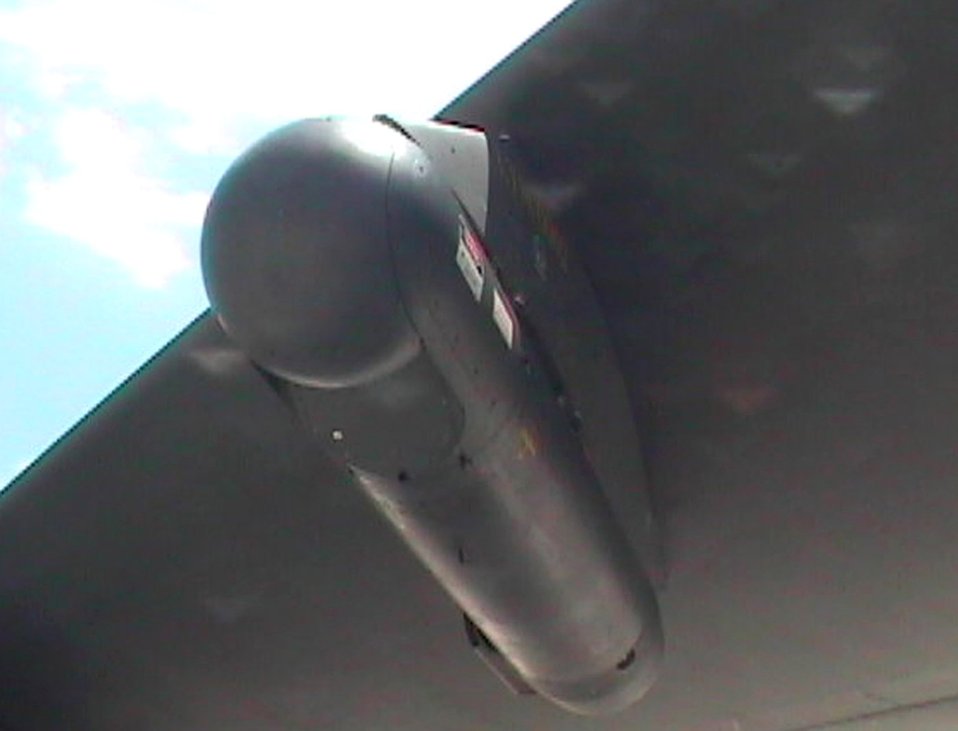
49th Test and Evaluation Squadron demos LITENING pod visual feed

A LITENING pod sits under the wing of a B-52. The 49th Test and Evaluation Squadron's recent demonstration showed the B-52's LITENING pod's capability to capture digital imagery and upload it to communications networks.